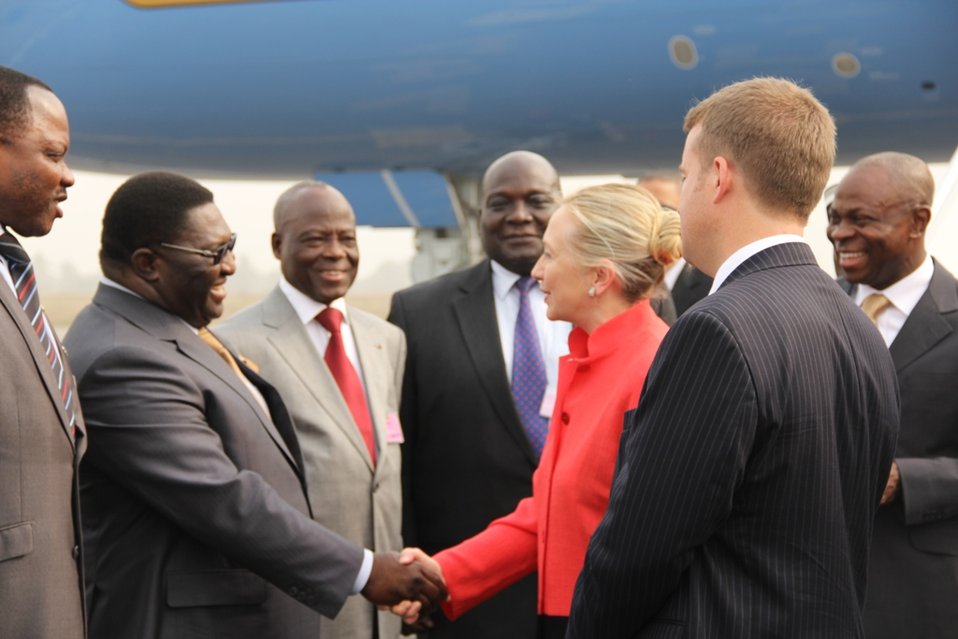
Secretary Clinton Is Greeted By Togolese Territorial Administration Minister Pascal Bodjona

U.S. Secretary of State Hillary Rodham Clinton is greeted by Togolese Territorial Administration Minister Pascal Bodjona in Lome, Togo, on January 17, 2012.